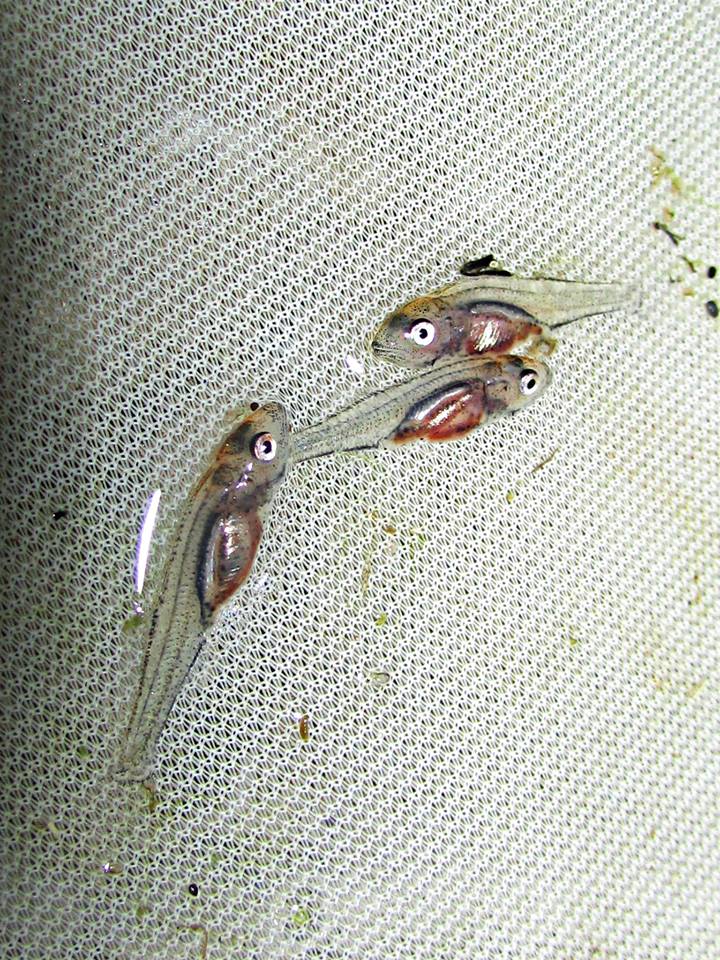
Fry

Today we checked up on our walleye, which are about the length of your fingernail. We haven't seen them since they were put in our ponds about three weeks ago. We will return at the beginning of June to harvest them for stocking.